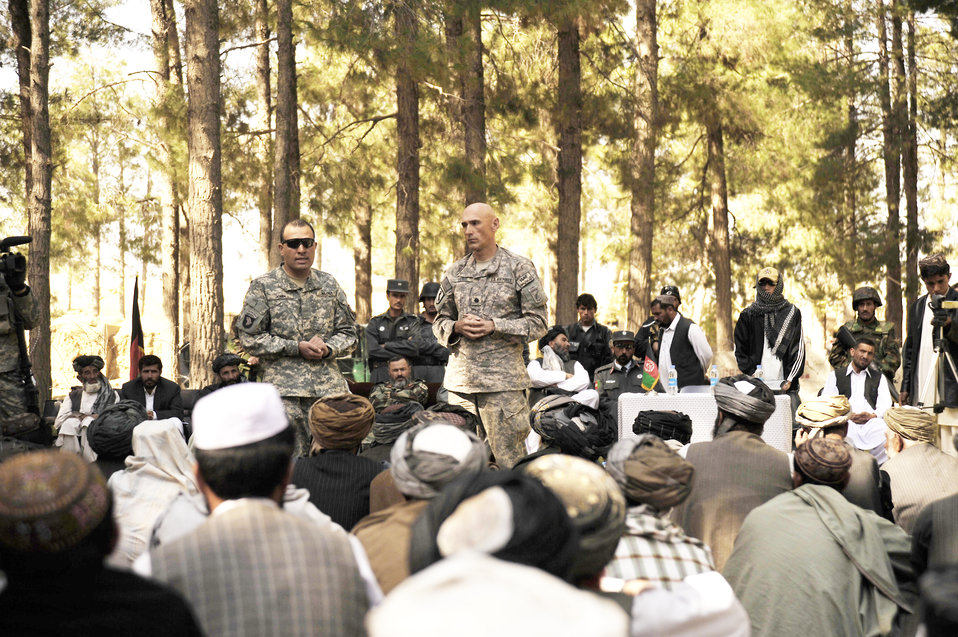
Political Campaign

U.S. Air Force Lt. Col. Andy Veres, Commander of Provincial Reconstruction Team Zabul, speaks to residents of Zabul Province about the importance of voting here Oct. 23, 2009.